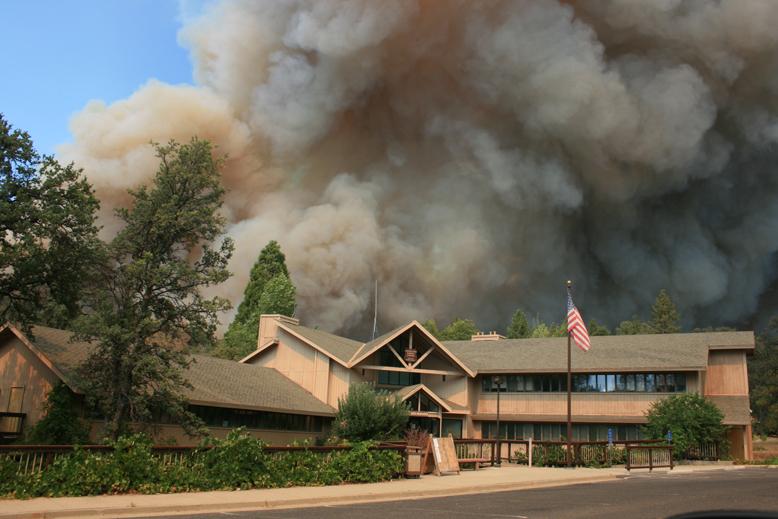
Rim Fire approaches the Groveland Ranger Station in the Stanislaus National Forest. The Rim Fire in the Stanislaus National Forest near in California began on Aug. 17, 2013 and is under investigation. The fire has consumed approximately 149, 780 acres and is 15% contained.